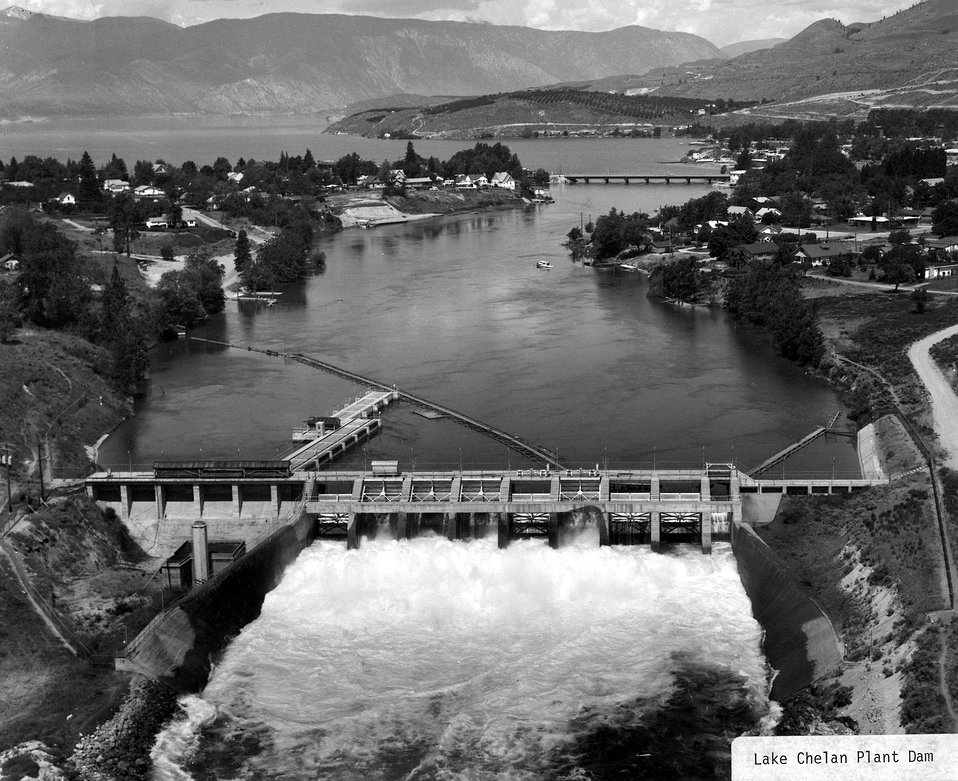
Lake Chelan Plant Dam. c. undated